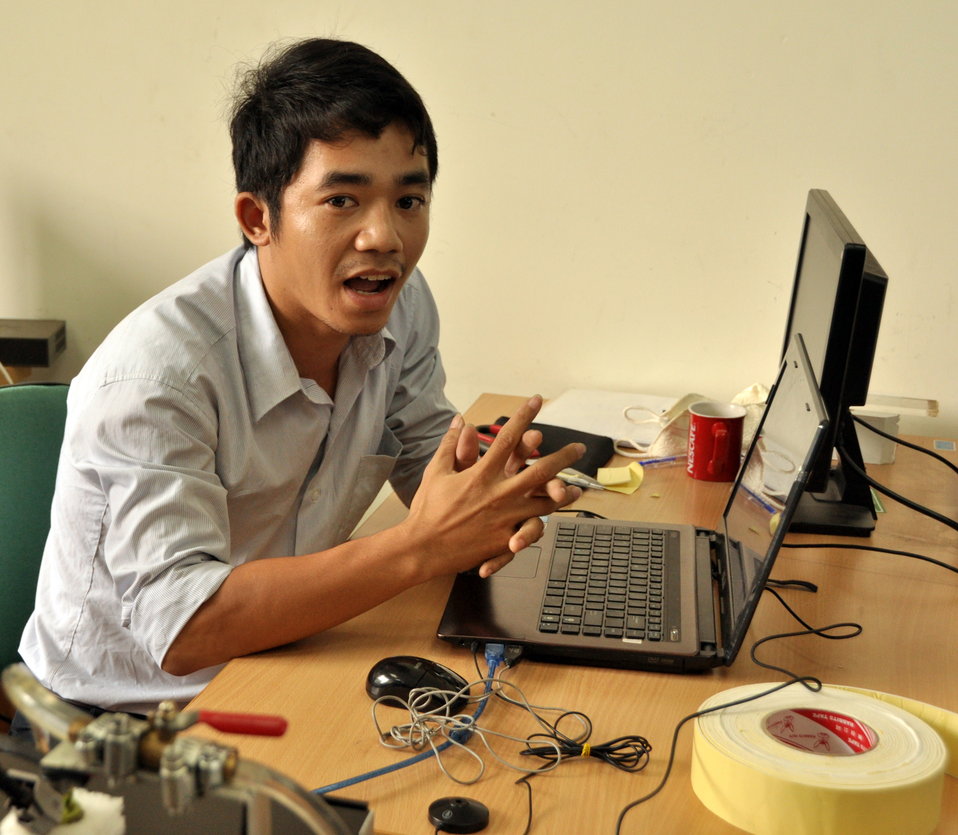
Ho Chi Minh City University of Technical Education, HEEAP Partner

Student Le Si Toan works on his fuel injection project with the guidance of HEEAP-trained faculty member, Nguyen Ba Hai.
January 11, 2013